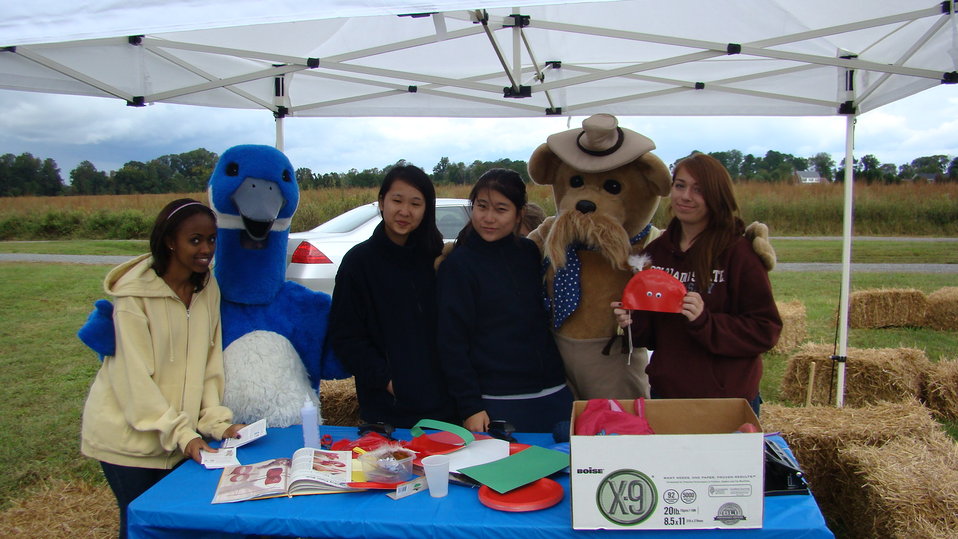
Rappahannock River Valley NWR 15th Anniversary

Volunteers pose with Puddles the Blue Goose and T.R. Bear at Rappahannock River Valley NWR's 15th Anniversary Celebration, 'Go Wild!'